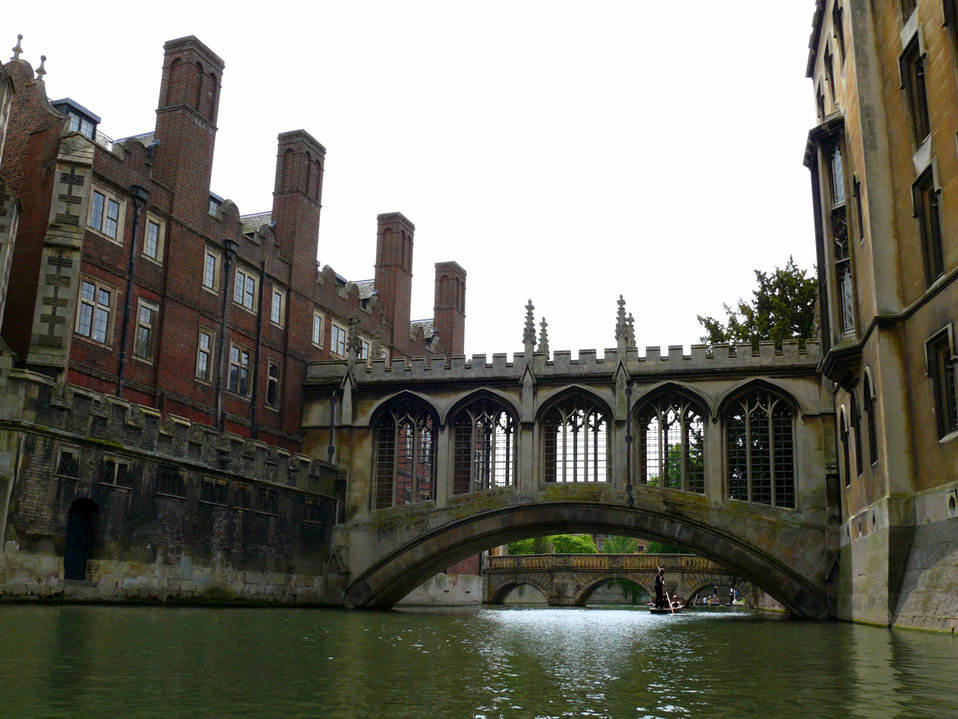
Bridge of sighs cambridge.